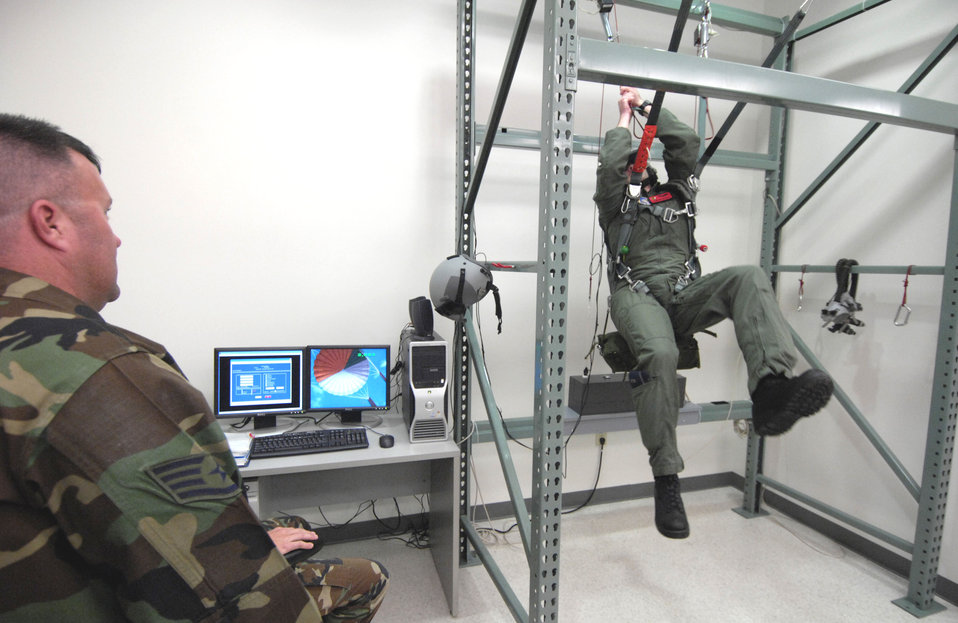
Virtual technology enhances training for aircrews

Staff Sgt. Christopher Ferguson watches as 1st Lt. John Brantuk II clears a malfunction on his parachute during virtual training at Hickam Air Force Base, Hawaii, on Oct. 4. Sergeant Ferguson is a survival, evasion, resistance and escape instructor with the 15th Operations Support Squadron. Lieutenant Brantuk is a pilot with the 535th Airlift Squadron.